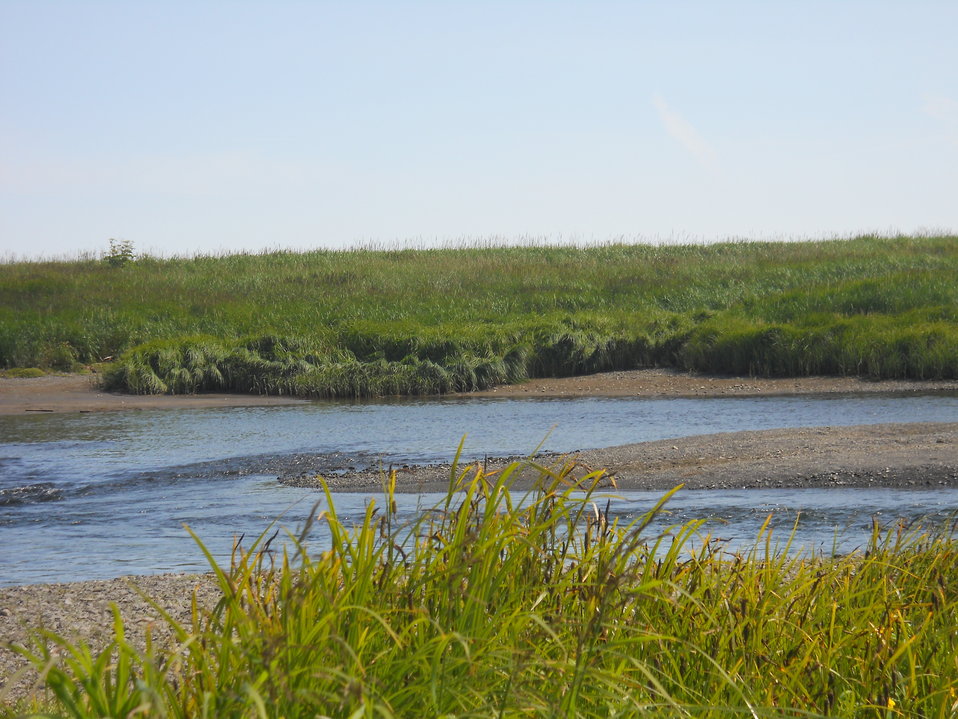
River Landscape

Credit: USFWS
Photo taken by a Salmon Camp participant during a nature photography activity.

Source and Contact: Kodiak National Wildlife Refuge